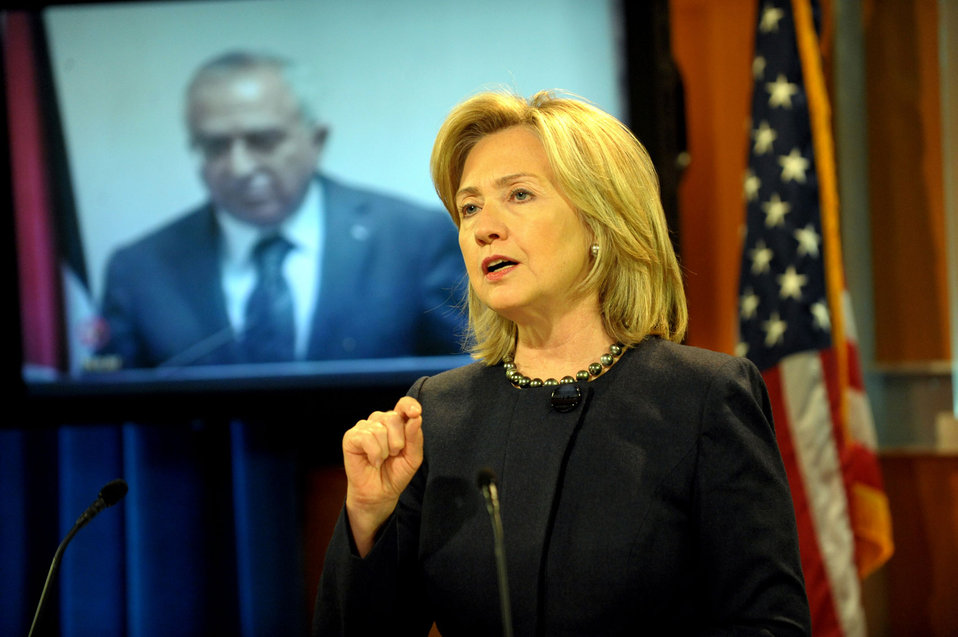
Secretary Clinton Announces the Transfer of Economic Support Funds for Budget Assistance to the Palestinian Authority

U.S. Secretary of State Hillary Rodham Clinton announces the transfer of Economic Support Funds for Budget Assistance to the Palestinian Authority via Digital Video Conference with
Palestinian Authority Prime Minister Salam Fayyad in the Press Briefing Room at the U.S. Department of State in Washington, D.C., on November 10, 2010.